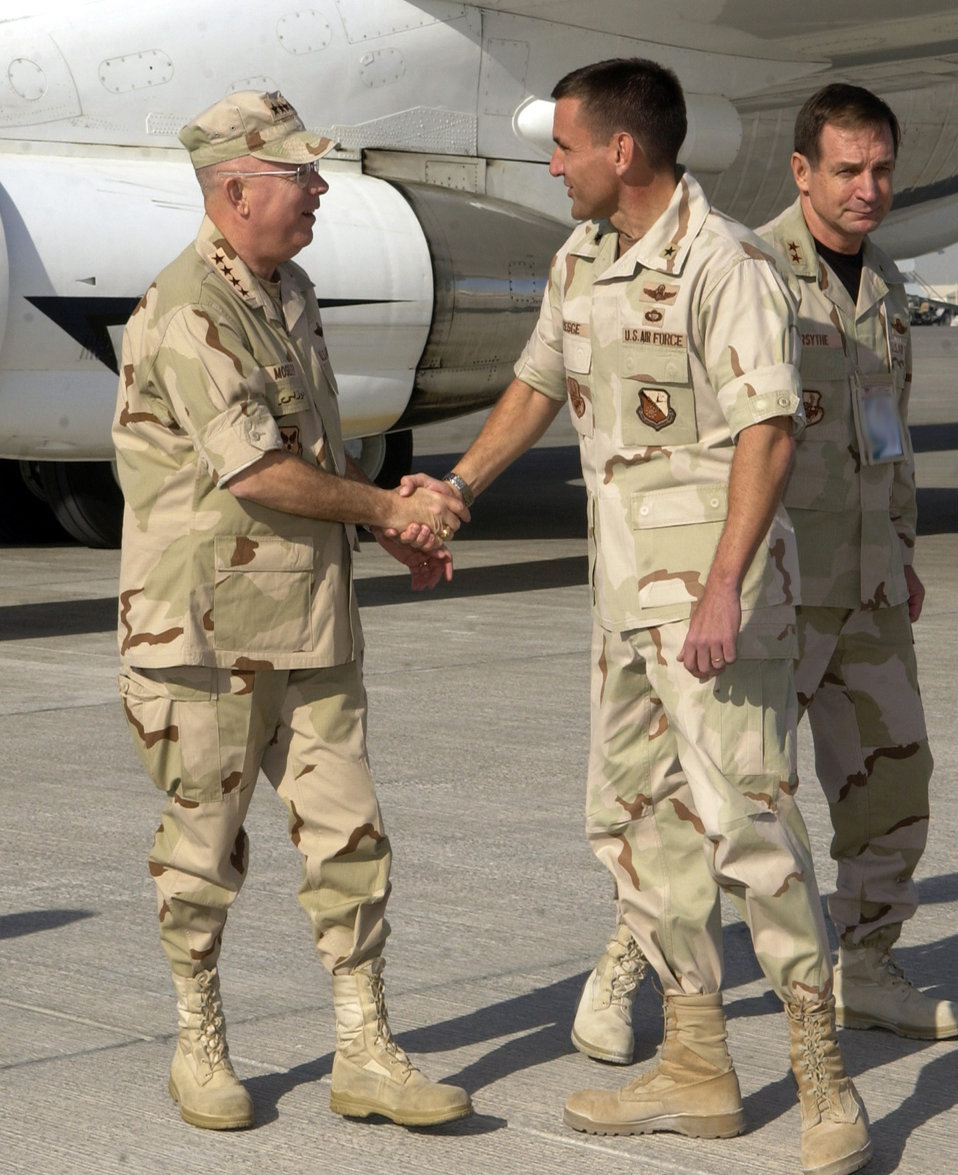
Trip downrange

SOUTHWEST ASIA (AFPN) -- Brig. Gen. Ted Kresge welcomes Chief of Staff of the Air Force Gen. T. Michael Moseley to this desert base. The General visited the 379th Air Expeditionary Wing and the combined air operations center. General Kresge is the wing's commander.